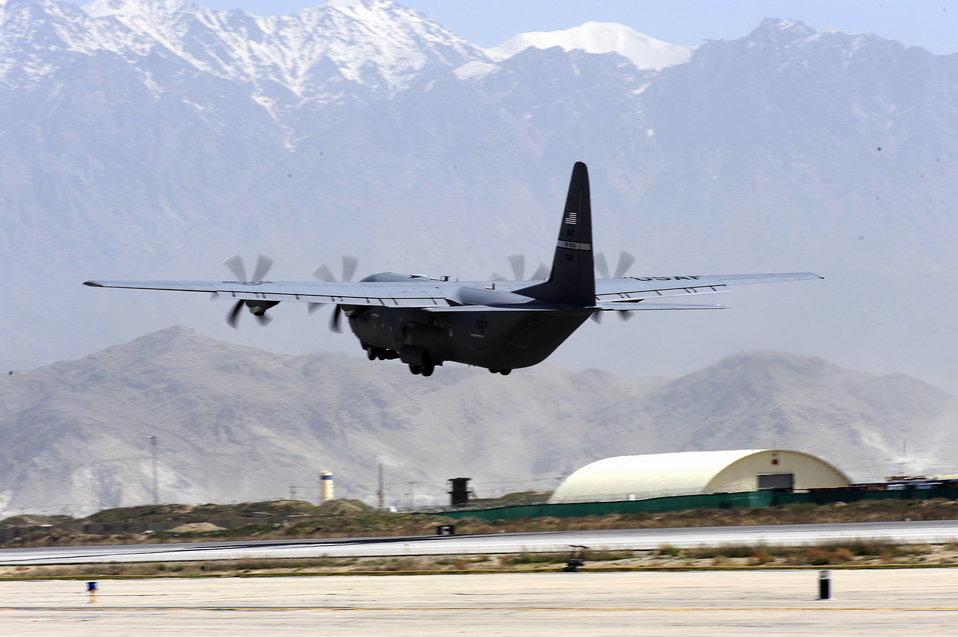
Off we go

A C-130 Hercules takes off on a support mission April 6, 2010, at Bagram Airfield, Afghanistan. The 455th Air Expeditionary Wing provides expeditionary combat and combat support to U.S. and coalition forces.